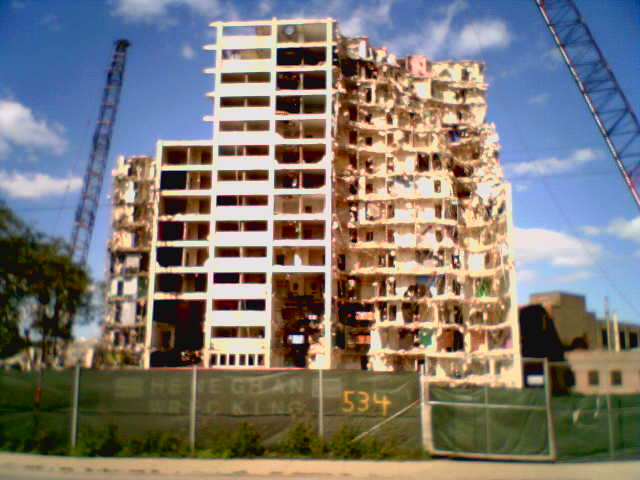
Demolition of the Cabrini-Green public housing units in Chicago, Illinois, in September 2006.